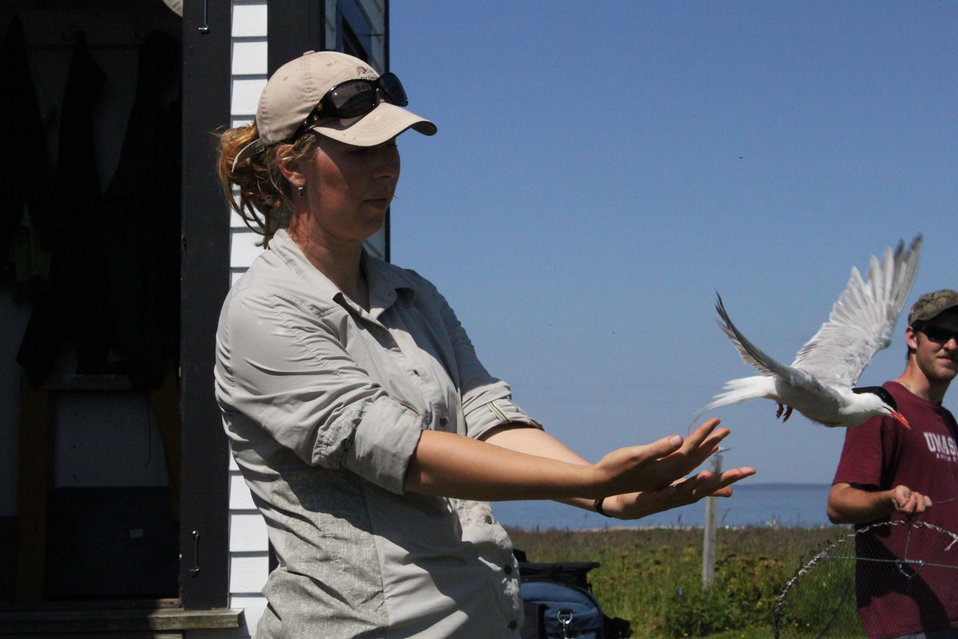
Setting Tern Free